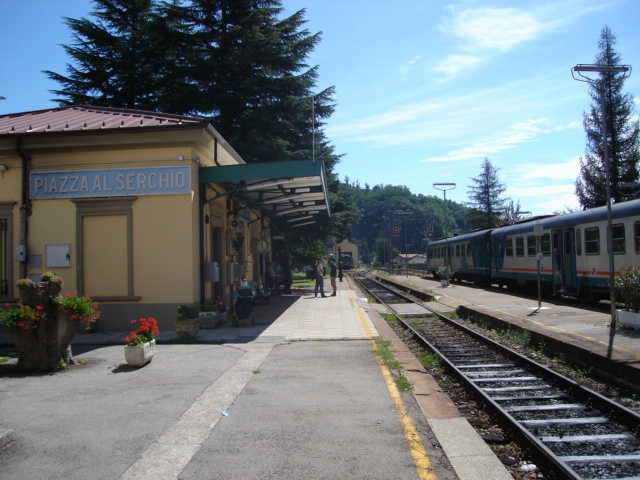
Italiano: stazione di Piazza al Serchio